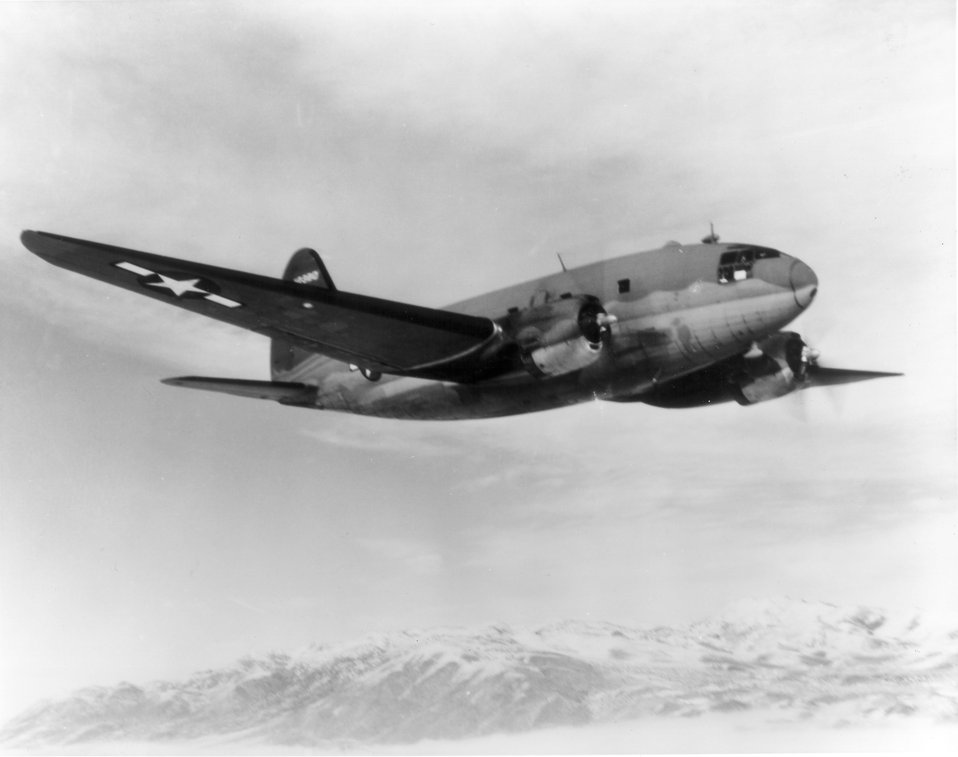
Curtiss C-46

1940's -- Curtiss C-46